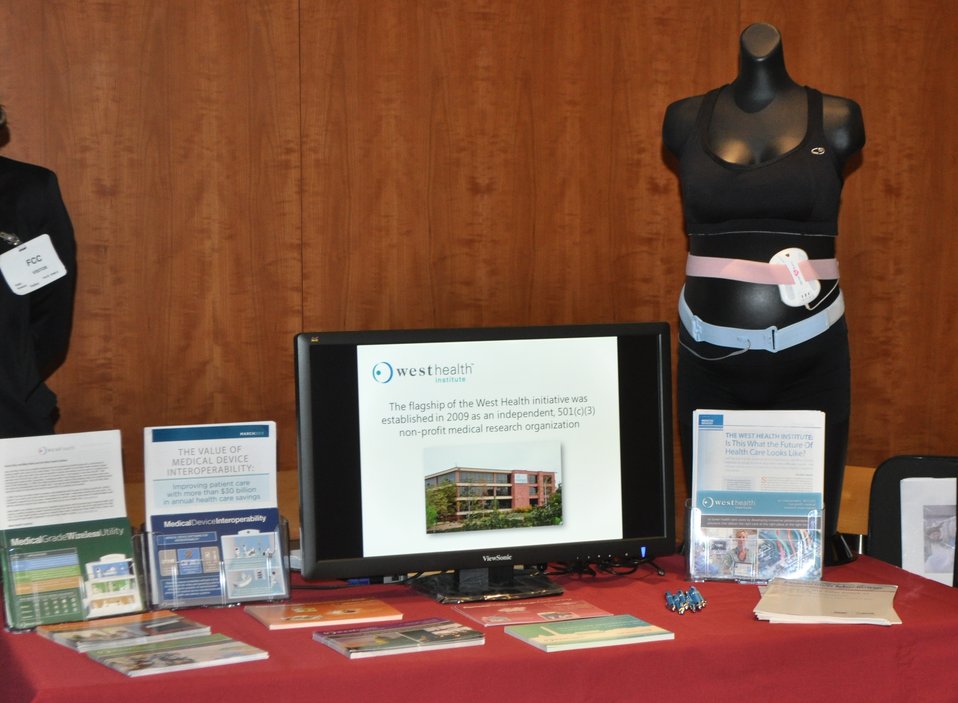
12.6.13 mHealth Innovation Expo

FCC mHealth Innovation Expo.